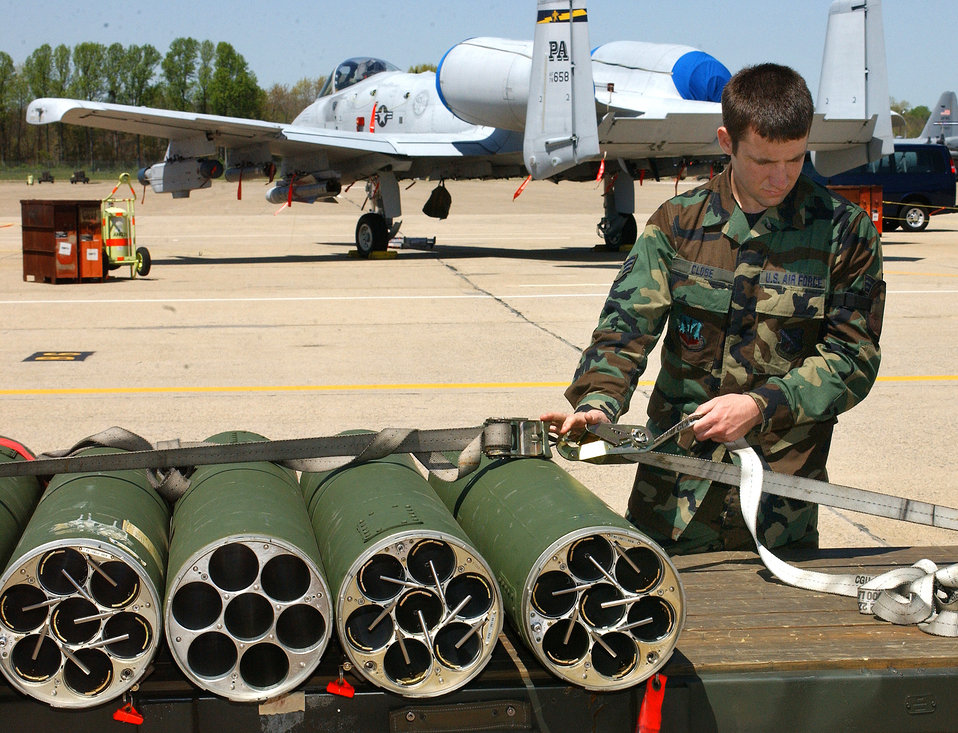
Operation ready

Senior Airman Stephen Close secures rocket housings on a trailer during the first phase of an operational readiness inspection at Willow Grove Air Reserve Station, Pa., on Saturday, April 29, 2006. Airman Close is with the Pennsylvania Air National Guard's 111th Maintenance Squadron.